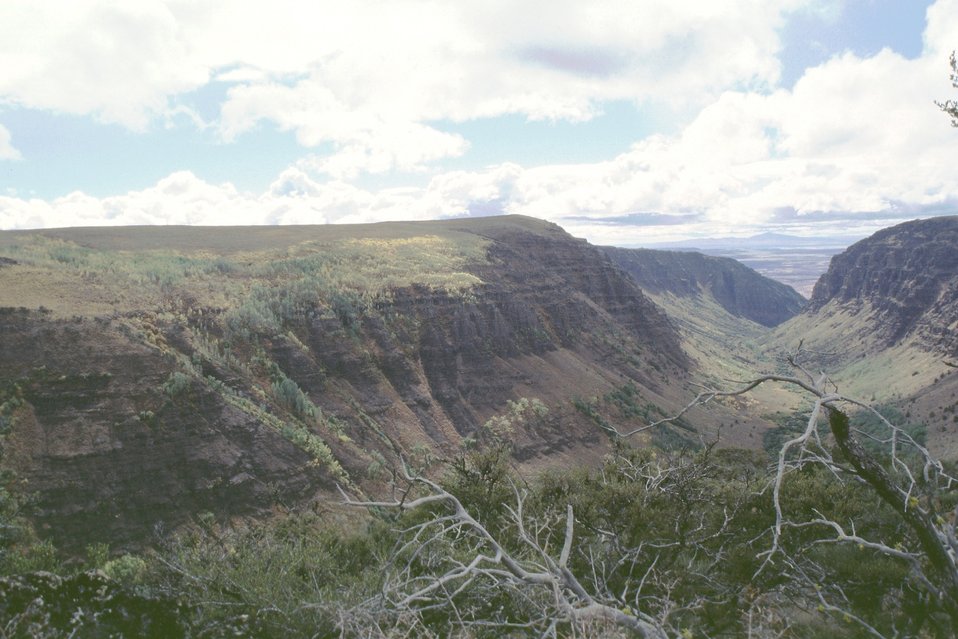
Little Blitzen looking West from Pruitt Overlook, Steen's Mountain.